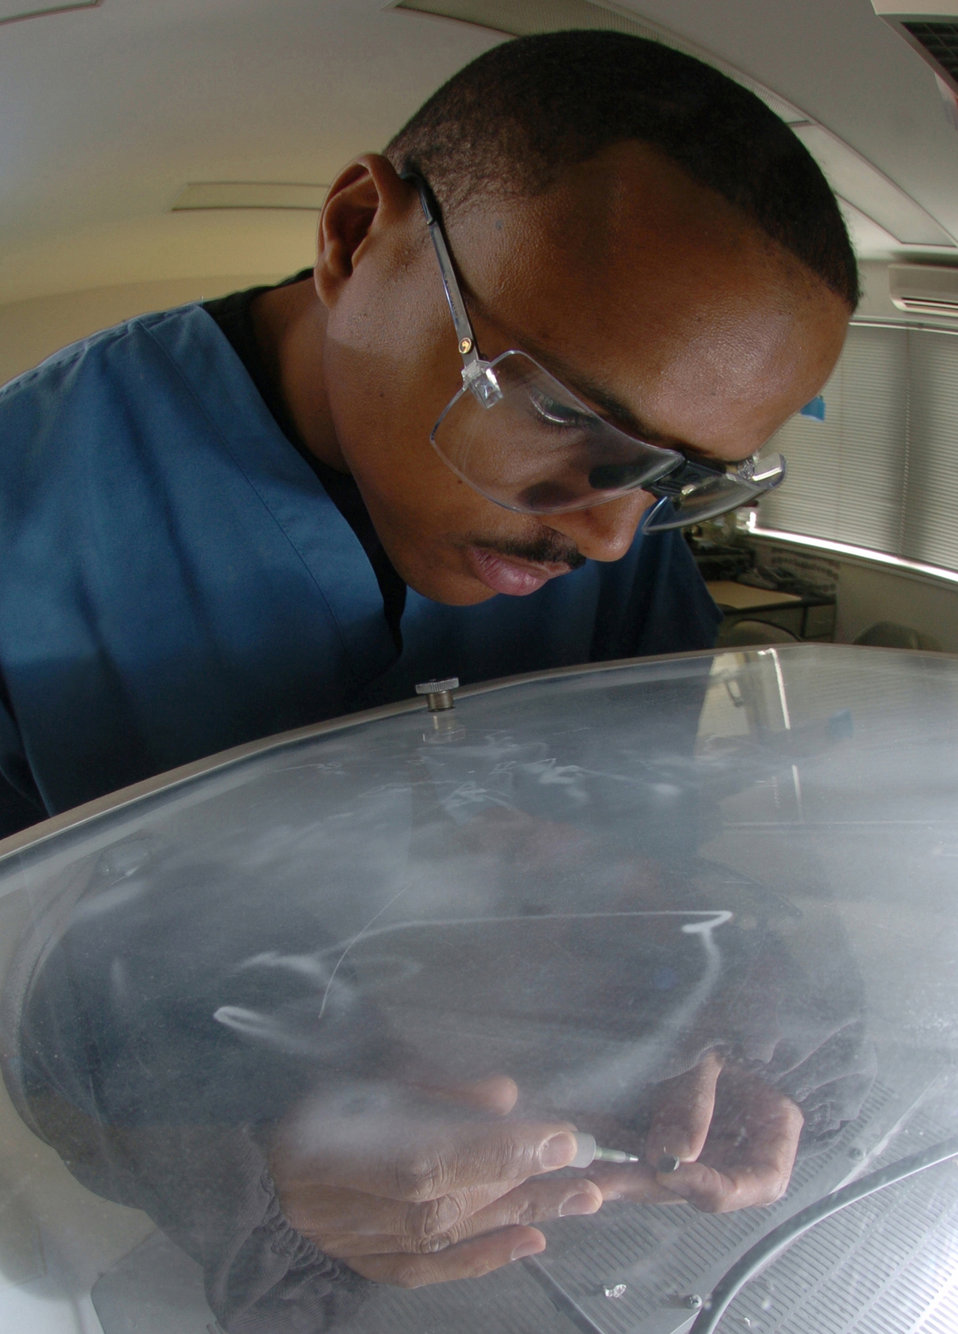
Dental lab techs keep Pacific forces smiling

YOKOTA AIR BASE, Japan -- Tech. Sgt. Keith Kinmon uses an orascoptic machine to sandblast a crown. He is a dental laboratory technician assigned to the 374th Dental Squadron here. The squadron's Airmen ensure maximum wartime readiness of Pacific Command people by providing comprehensive dental care for the active-duty servicemembers and other eligible beneficiaries.